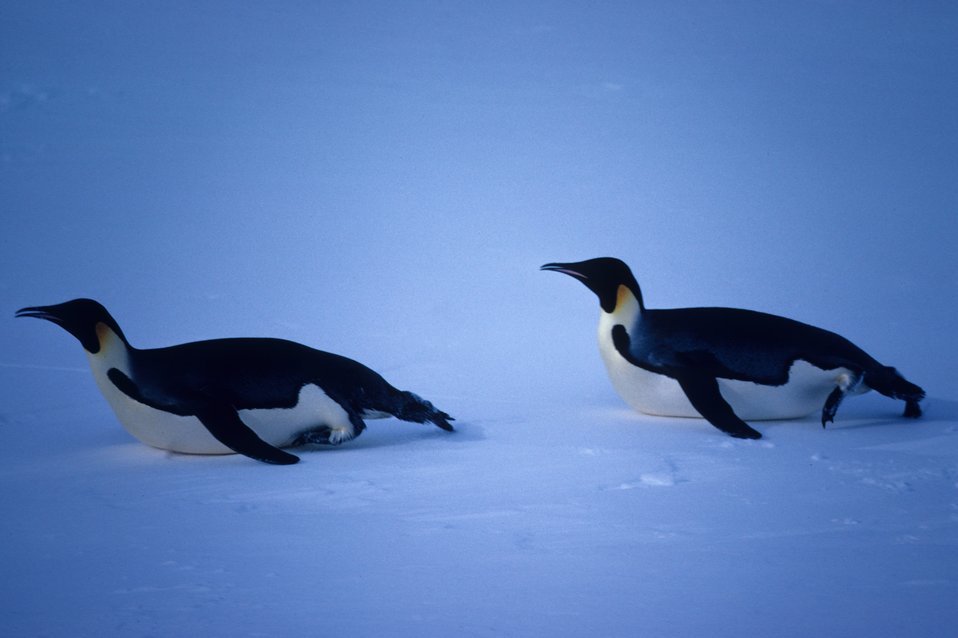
Emperor Penguins.